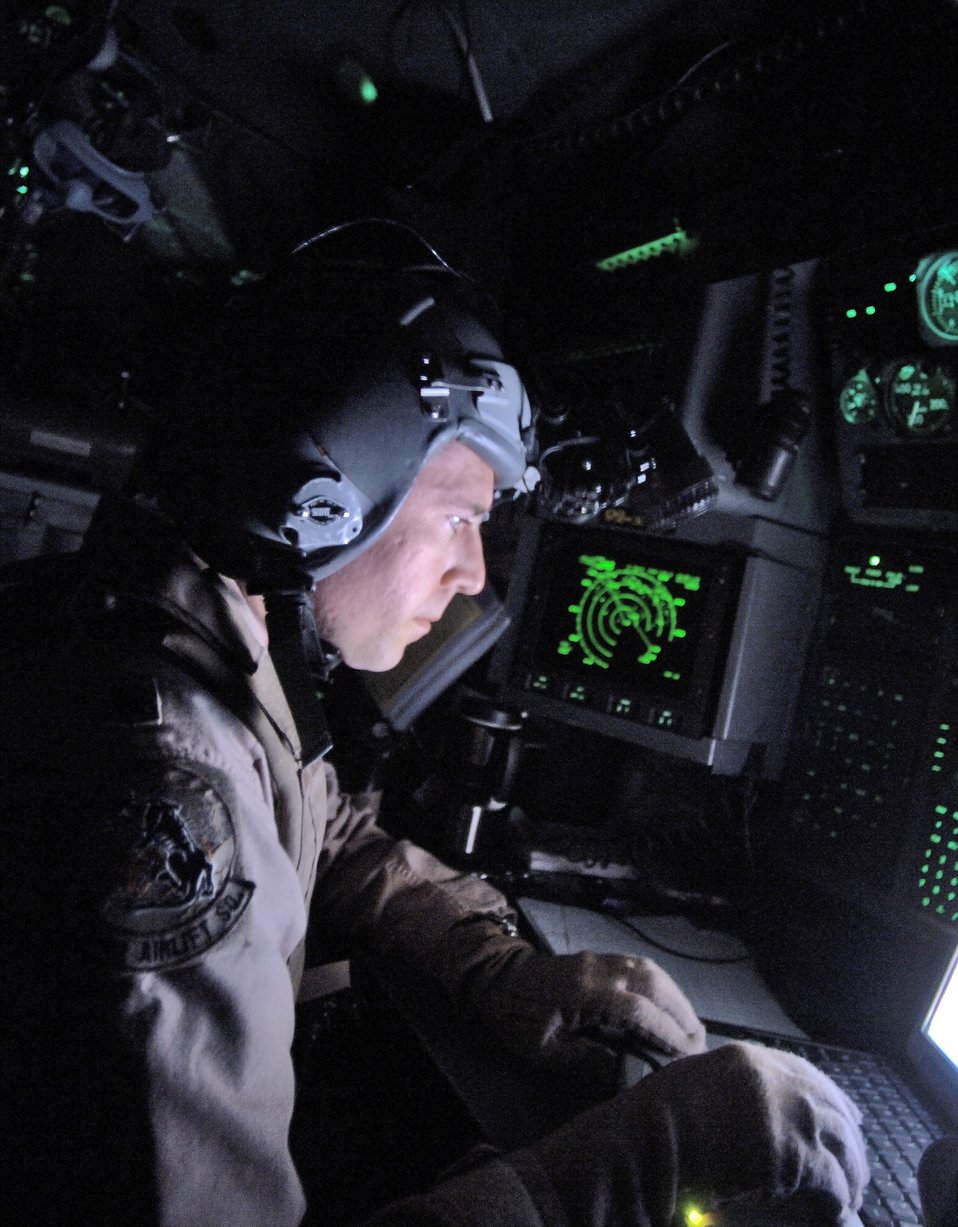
New Years' over Iraq

OVER BALAD AIR BASE, Iraq (AFPN) -- Reserve navigator Maj. Eric Heftye keeps his C-130 Hercules on course during a New Year's Eve mission to Balad Air Base. The delivered 13 passengers and 13,000 pounds of cargo -- landing at Balad in 2006. Members of the Air Force Reserve Command's 731st Airlift Squadron, the crew is ending a Southwest Asia tour with the 746th Expeditionary Airlift Squadron.